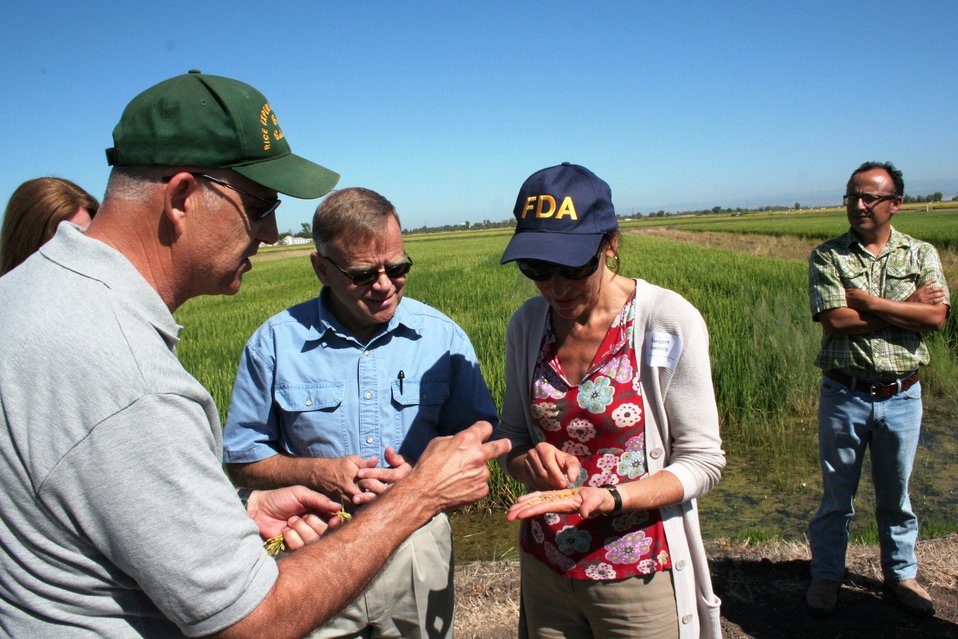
FDA's Rice Tour: Looking for Insights on Arsenic (0800)

FDA Commissioner Margaret A. Hamburg and colleagues visited research facilities and rice farms in California on Sept. 4-5, 2013 in an effort to gain a greater understanding of the presence of arsenic in rice. Shown is Kent McKenzie, left, director of the Rice Experiment Station, with FDA's Deputy Commissioner for Foods and Veterinary Medicine Michael Taylor and Hamburg. For more information, read the FDA Voice blog:

• On Farms and in Labs, FDA and Partners Are Working to Get Answers on Arsenic in Rice